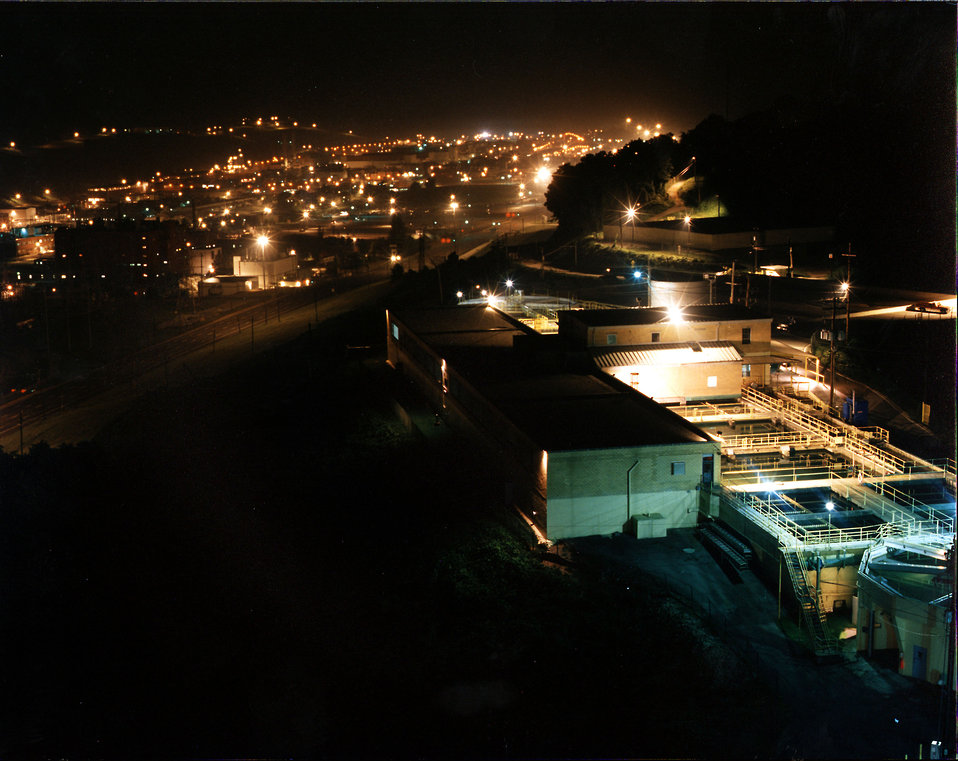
Y-12 Plant at Night

94-598 DOE photo by Lynn Freeny

Y-12 Plant taken from water tower at water treament facility Oak Ridge Tennessee 9-10-1994